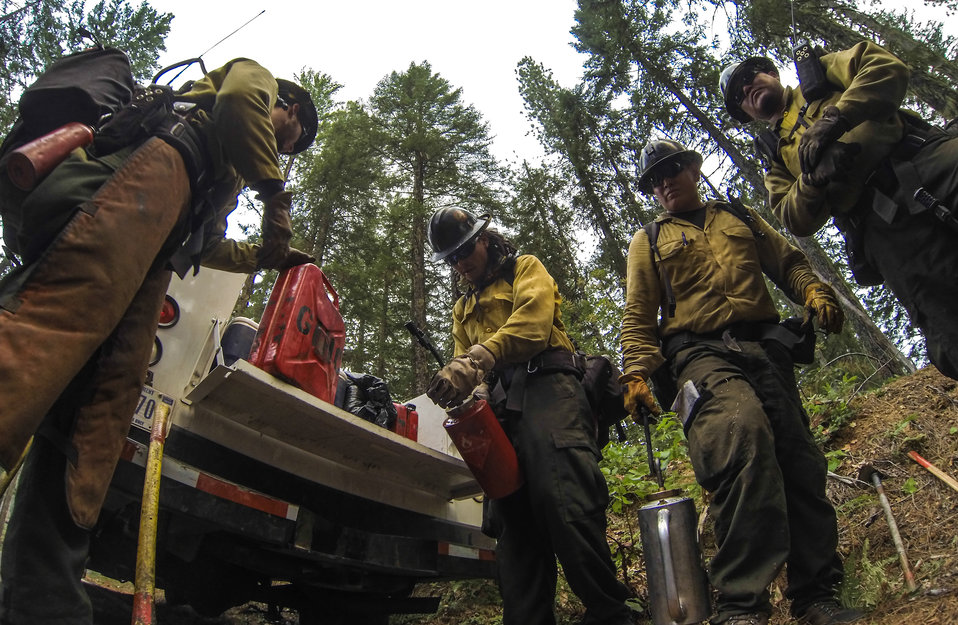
Geronimo Interagency Hotshot Crew, Department of the Interior (DOI) Indian Affairs (IA) Bureau of Indian Affairs (BIA) San Carlos Agency in Arizona; on assignment at the Big Windy Complex Wildlands Fire, approximately 15 miles west of Interstate-5 and East Northeast of Galice, Oregon, conducts a prescribed burn 'burnout' operation to help stop the main fire that may head toward this roadway, on Friday, Aug 9, 2013. The primary mission of the Interagency Hotshot Crews (IHC) is to provide a safe, organized, mobile and highly skilled hand crew for all phases of wildland fire suppression. The arduous duties and specialized assignments required of IHC personnel require uniform staffing, certification, training, equipment, communications, transportation, organization, and qualifications that adhere to interagency standards and guidelines.